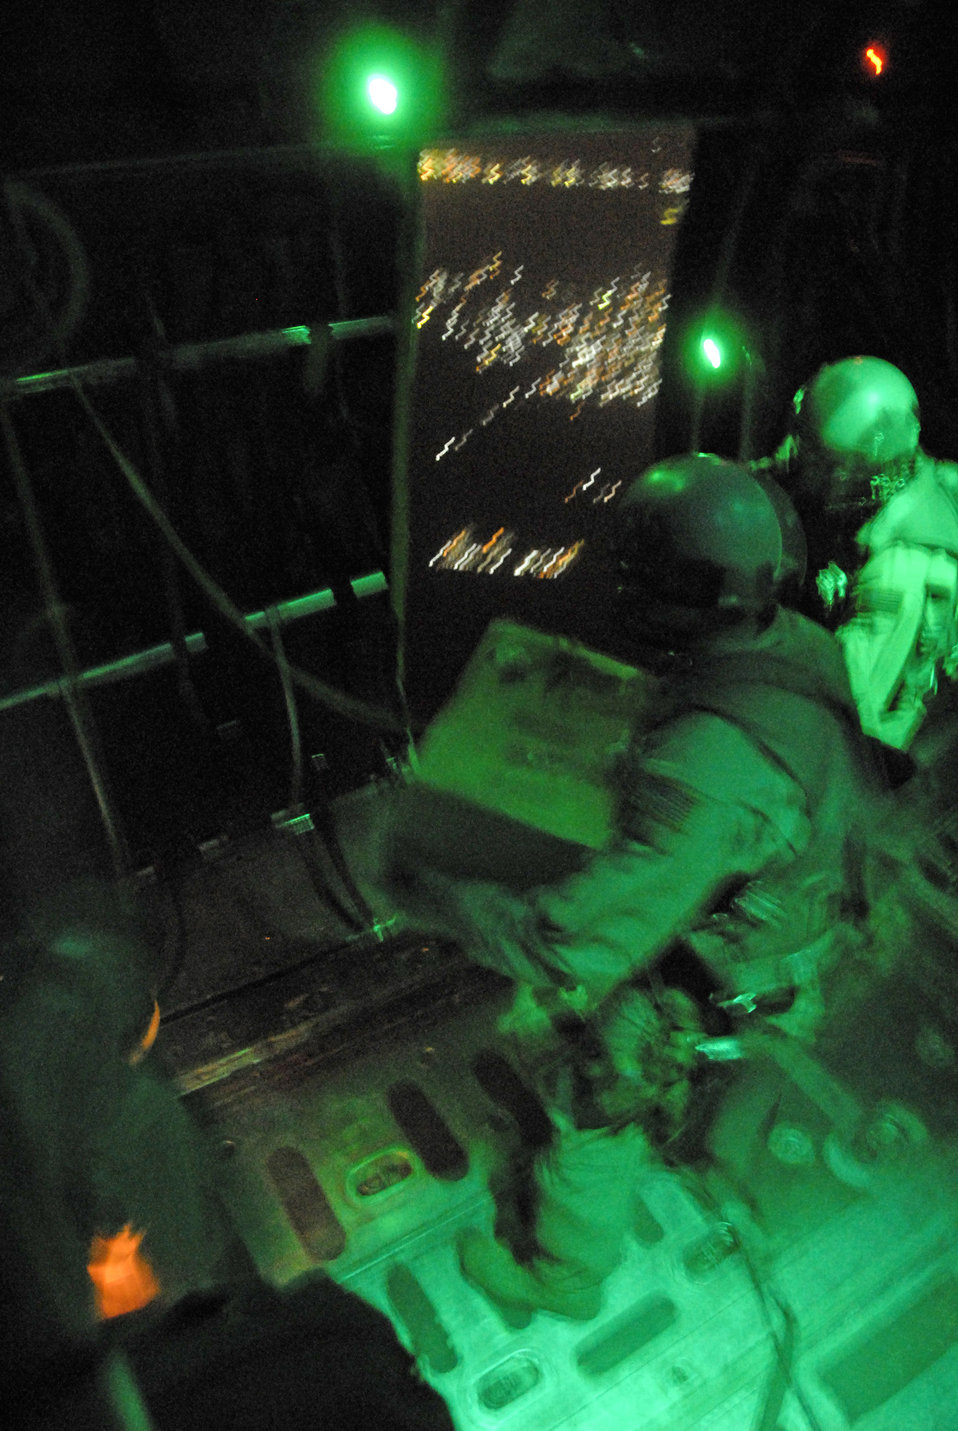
Airmen airdrop messages to Iraqi citizens

Aircrew members from the 737th Expeditionary Airlift Squadron wait for the light above the right rear troop door to turn green before they push out several hundred thousand leaflets over an Iraqi city recently. The three-person team includes 1st Lt. Justin Fitzpatrick (left) and Senior Airman Joel Pfaff (center), who fill the roles as feeders to Staff Sgt. Gabriel Molanders (right), the kicker on the team who ensures the leaflets get out the door and over the target area. All three aircrew members are deployed from Dyess Air Force Base, Texas.